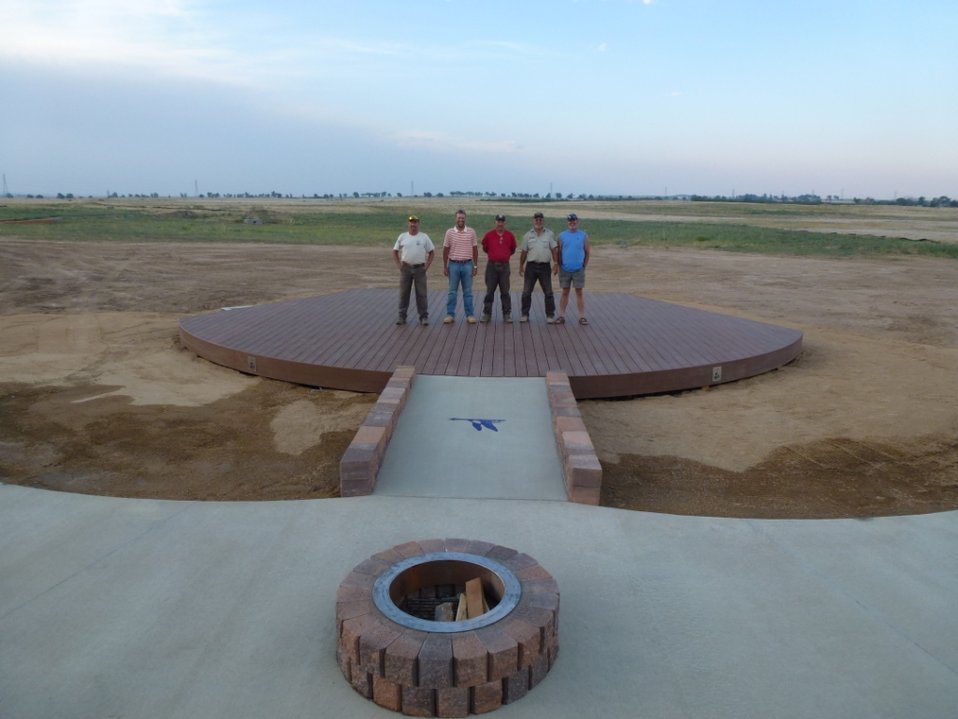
Refuge Maintenance Action Team

Thanks to the work of a Mountain-Prairie Region Refuge Maintenance Action Team (MAT), a new amphitheater was recently erected adjacent to the Rocky Mountain Arsenal National Wildlife Refuge’s visitor center in Commerce City, Colo.

The amphitheater is a fully accessible facility with seating for 175 to 200 spectators. It features a stage and fire pit for special programs. The addition of the amphitheater to the visitor center will enhance interpretive program delivery as part of the facility’s regular visitor services and will be used for special events. Commerce City has also expressed an interest in using the amphitheater for programs of its own.

The project was completed under budget and cost nearly half as much as the bids received from private contractors. According to rough estimates, the U.S. Fish & Wildlife Service saved approximately $70,000. The substantial cost savings was realized by employing the MAT, which is comprised of in-house maintenance workers with various skill sets from several stations across the region. Typically, deferred maintenance dollars pay for the project materials, labor, travel, room and board of MAT members. MAT projects usually take between one to five weeks to complete.

Construction began May 7, 2012 and concluded June 13, 2012 with a one-week pause in the middle of the project to allow MAT members a break. In total, the project took 34 12-hour-work days. The MAT worked more than 2,000 man hours on the project with no time lost due to injury or any safety-related issues.

The Refuge MAT consisted of:
• Rich Iwanski – Bear River Migratory Bird Refuge – Engineering Equipment Operator – Pre-construction organization, MAT team foreman, Equipment Operator and other general work.
• Cameron Fenrich – Mountain-Prairie Regional Office – Civil Engineer – Project Manager, Project Engineer, amphitheater design, on-site inspections, general construction work and overall construction and MAT team organization.
• Steve Raney – Baca National Wildlife Refuge – Maintenance Worker - Equipment Operator and other general work.
• Justin Wanzek – Valley City Wetland Management District – Maintenance Worker- Equipment Operator and other general work.
• Delbert “Skip” Palmer – Lee Metcalf National Wildlife Refuge – Maintenance Worker - Concrete Specialist and other general work.
• Tom Ronning – Rocky Mountain Arsenal National Wildlife Refuge – Range Conservationist - Truck Driver and other general work.